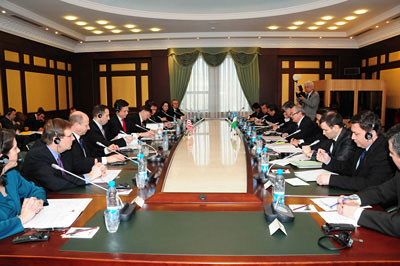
The United States and Uzbekistan engage in discussions during the Annual Bilateral Consultations in Tashkent in Uzbekistan, on February 18, 2011.